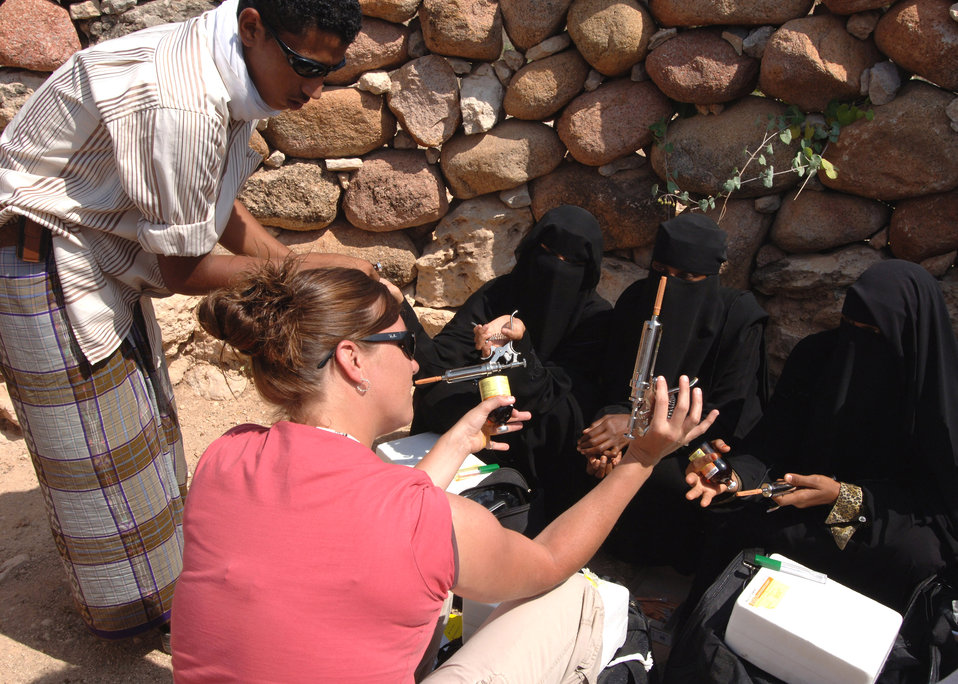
Veterinary project has big impact on small island

Army Staff Sgt. Jennifer A. Brooks, a civil affairs specialist, explains the use of an auto injector to a group of animal health workers as part of a Combined Joint Task Force-Horn of Africa veterinary civic action project on the island of Socotra, Yemen. The objective of the project was to teach women on the island basic animal husbandry techniques.